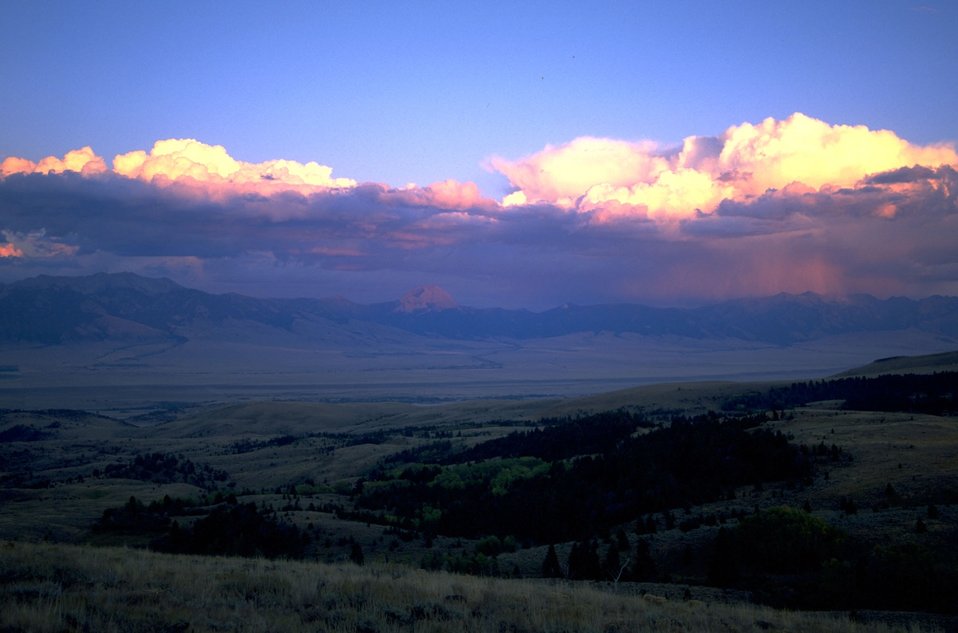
Reflection of the sun on clouds in the late evening light